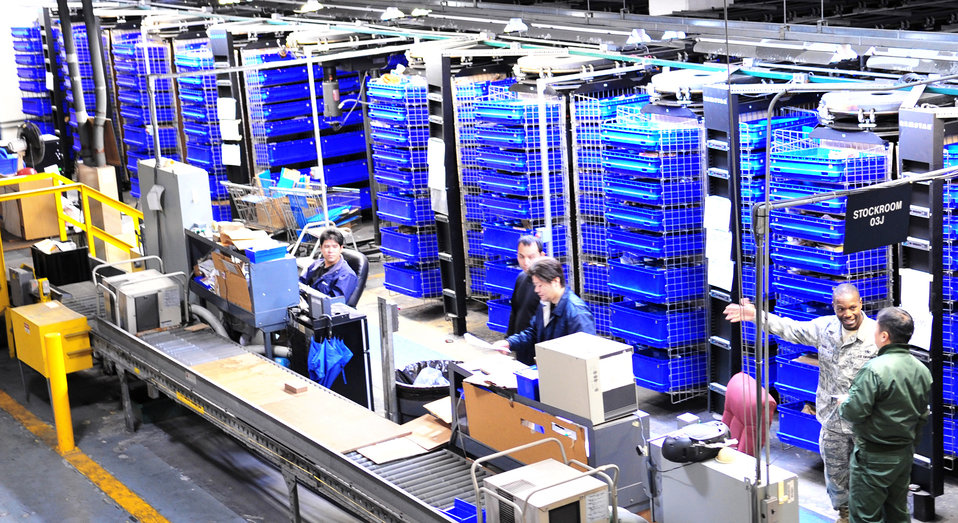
Bilateral training strengthens American, Japanese ties

A Japan Air Self Defense Force member learns the process of issuing military supplies from Airmen at the 18th Logistics Readiness Squadron Feb. 16, 2010 at Kadena Air Base, Japan.